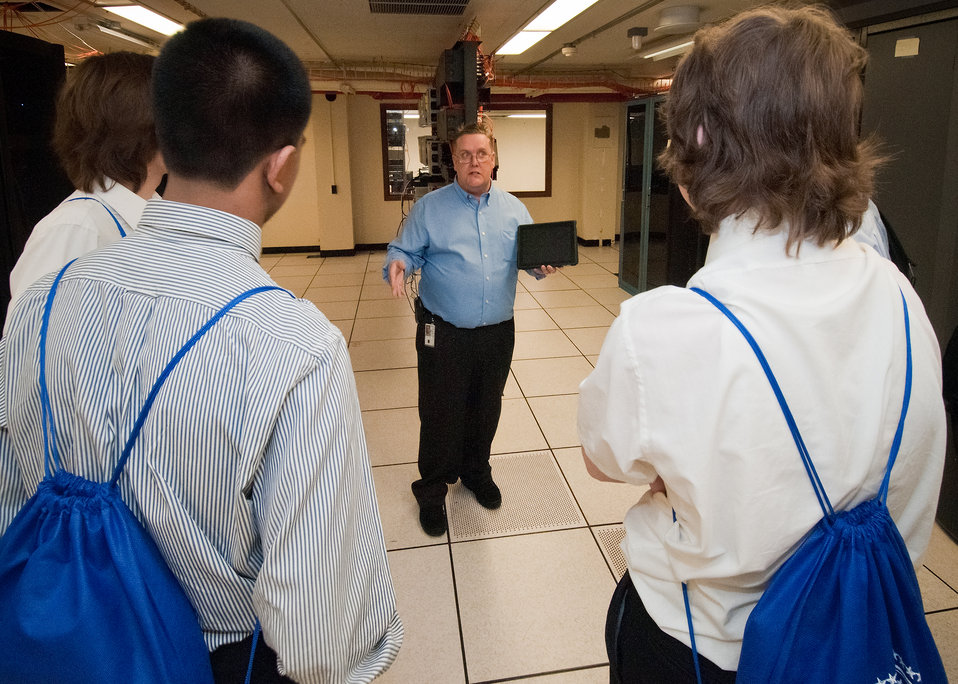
Mike Hubenschmidt, Enterprise Systems Manager, The Engle Group explains the state of the 2010 email system and support systems for applications at the United States Department of Agriculture (USDA) to students from the Springbrook High School, Academy of Information Technology in Silver Spring, Maryland during the annual USDA Information Technology Job Shadow Day on Wednesday, April 13, 2011. The Information Technology Job Shadow Day an opportunity for students from local high schools to learn the breadth and depth of information technology at USDA and how it is applied the department. Students toured the Network Operations Center, the Badging Office and had a lecture on geospatial technology.